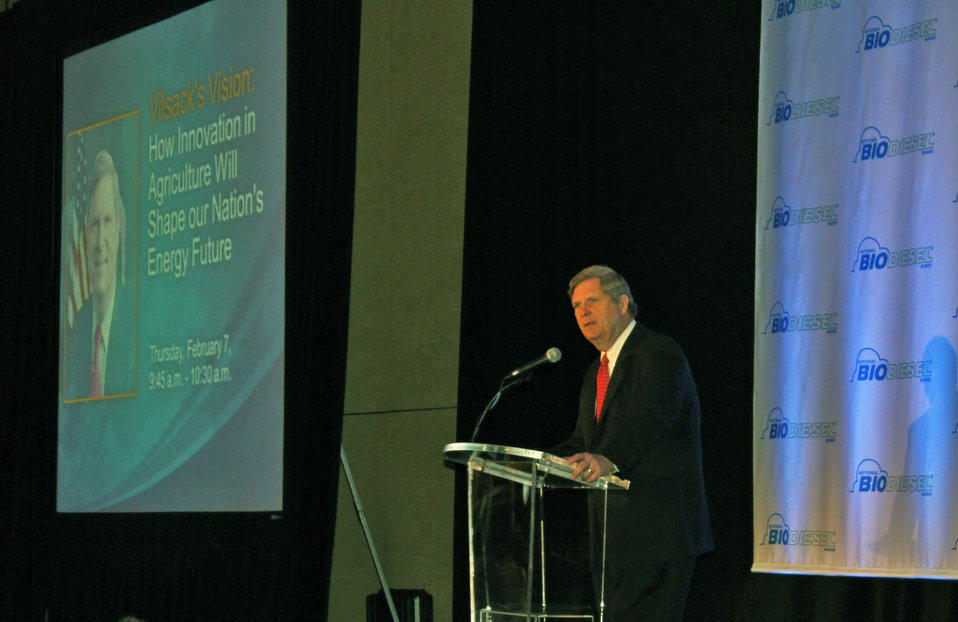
Agriculture Secretary Tom Vilsack makes remarks at the Momentum National Biodiesel Conference in Las Vegas, NV., on February 8, 2013.